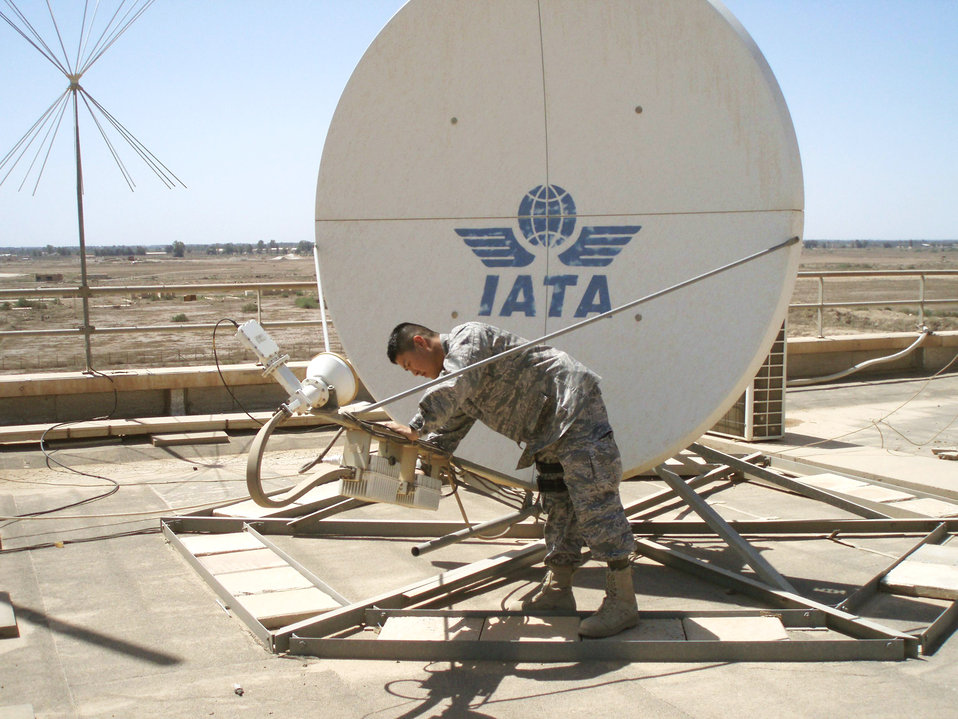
Communications officer advises, assists Iraqis restore air traffic control

Capt. Kurando Mensen inspects a Very Small Aperture Terminal dish at a civilian airport March 17, 2010, in Iraq. Captain Mensen is a communications planner for the Air Component Coordination Element-Iraq.